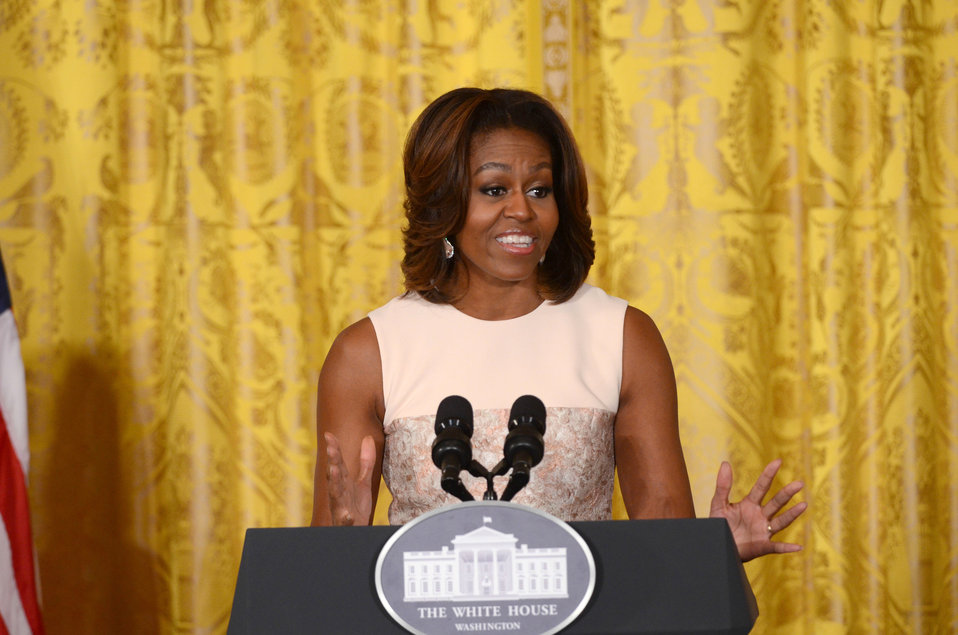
First Lady Michelle Obama announces proposed guidelines for local school wellness policies and roll out of breakfast and lunch programs for schools that serve low-income communities in the East Room of the White House in Washington, D.C. on Tuesday, Feb. 25, 2014. The bipartisan Healthy, Hunger-Free Kids Act of 2010 mandated that the U.S. Department of Agriculture (USDA) set guidelines for what needed to be included in local school wellness policies in areas such as setting goals for nutrition education and physical activity, informing parents about content of the policy and implementation, and periodically assessing progress and sharing updates as appropriate. The proposed guidelines would ensure that foods and beverages marketed to children in schools are consistent with the recently released Smart Snacks in School standards and ensuring that unhealthy food is not marketed to children is one of the First Lady's top priorities. To help schools with the implementation of the school wellness policies, the U.S. Department of Agriculture has launched a new 'School Nutrition Environment and Wellness Resources' website, which includes sample wellness policy language for school districts and a dedicated page of resources for food marketing practices on the school campus.